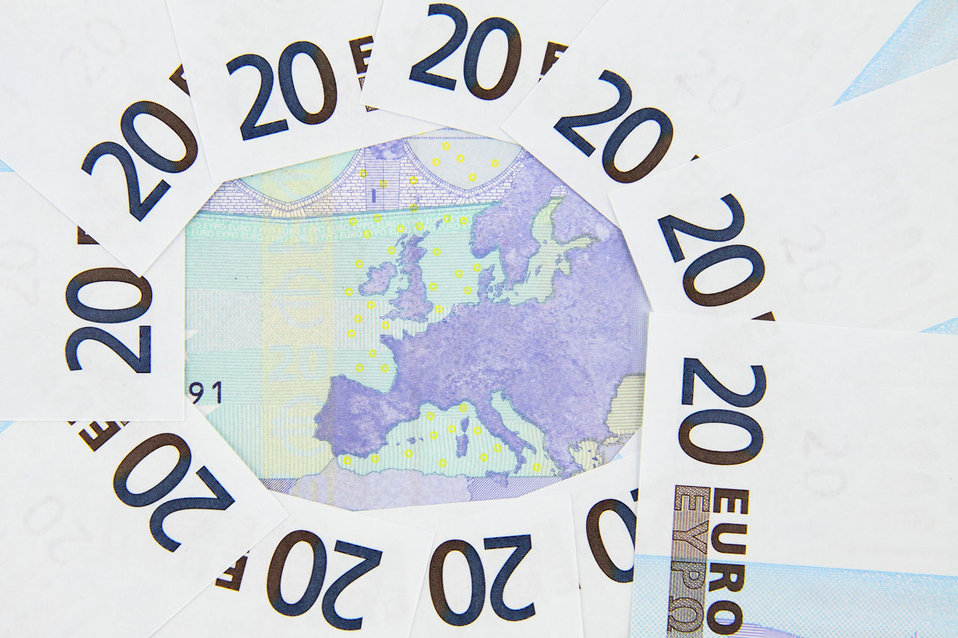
Europe euros

Europe map surrounded by 20 euro bank notes.